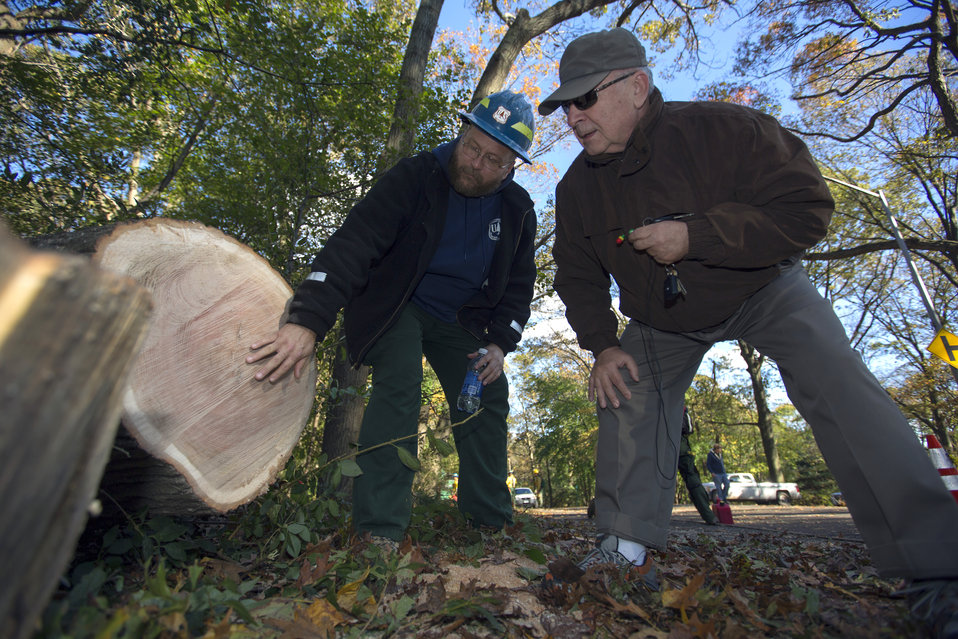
U.S. Forest Service (USFS) Task Force Leader Chuck Lane shows a New York City resident the rings of a cut tree in Forest Park, Queens, and NY on Nov. 4, 2012. New York officials requested support from the U.S. Forest Service through the Federal Emergency Management Agency (FEMA) to assist clearing the parks of downed trees in order to make passage safe for local residents.